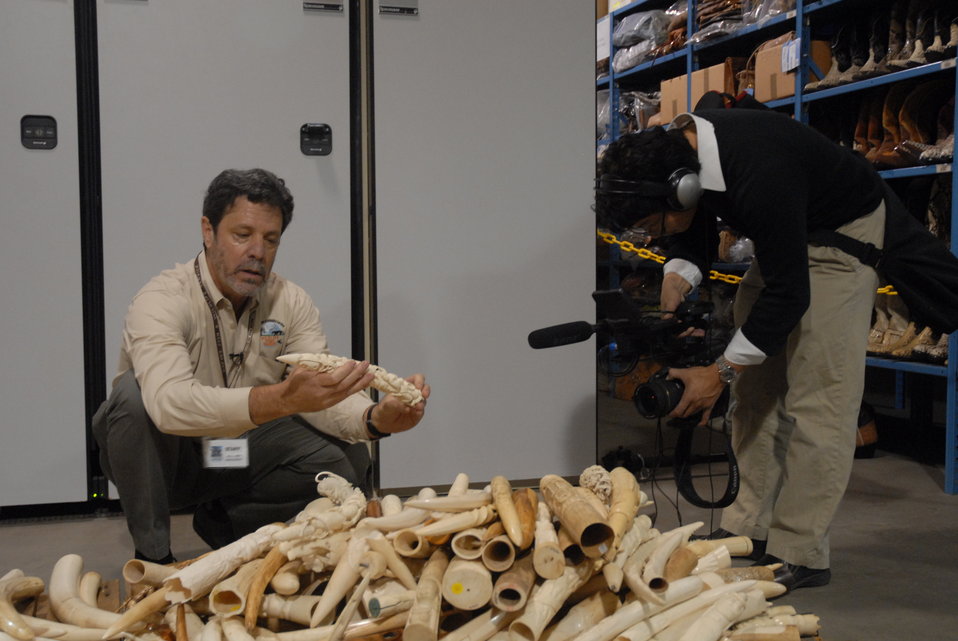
Rich Ruggiero, USFWS International Affairs, Chief of Africa Branch being interviewed by reporters.